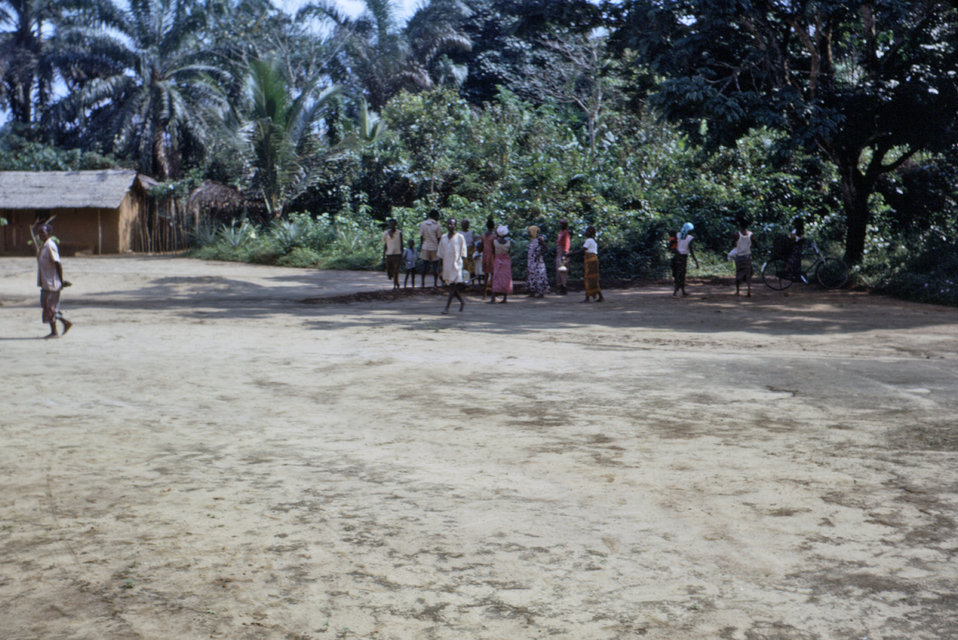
This 1968 photograph showed a major road intersection at which point refugees of the Nigerian-Biafran civil war would congregate in order to receive food distributions during CDC's relief efforts during the late 1960s.